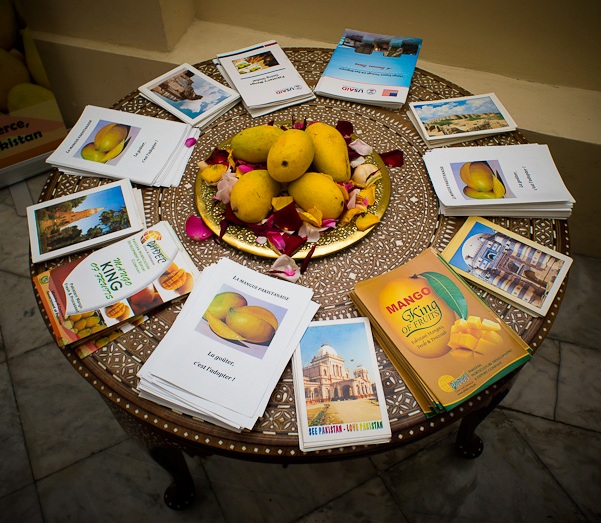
Celebrating Pakistani Mangoes in France

France, July 3, 2013: Pakistani mangoes travel to new markets with the help of USAID. USAID Firms Project partner beneficiaries sent a trial shipment of Sindhri and Chaunsa mangoes to Paris, France. The varieties, air shipped from two USAID supported SME (small and medium enterprise) farms in Sindh, were displayed at a high profile event organized at Embassy of Pakistan in Paris, France on July 3, 2013. These were sent from Mustafa Agri Farm, Ghulam Sarwar Abro’s under the umbrella of SMG-Sindh Mango Growers Association.